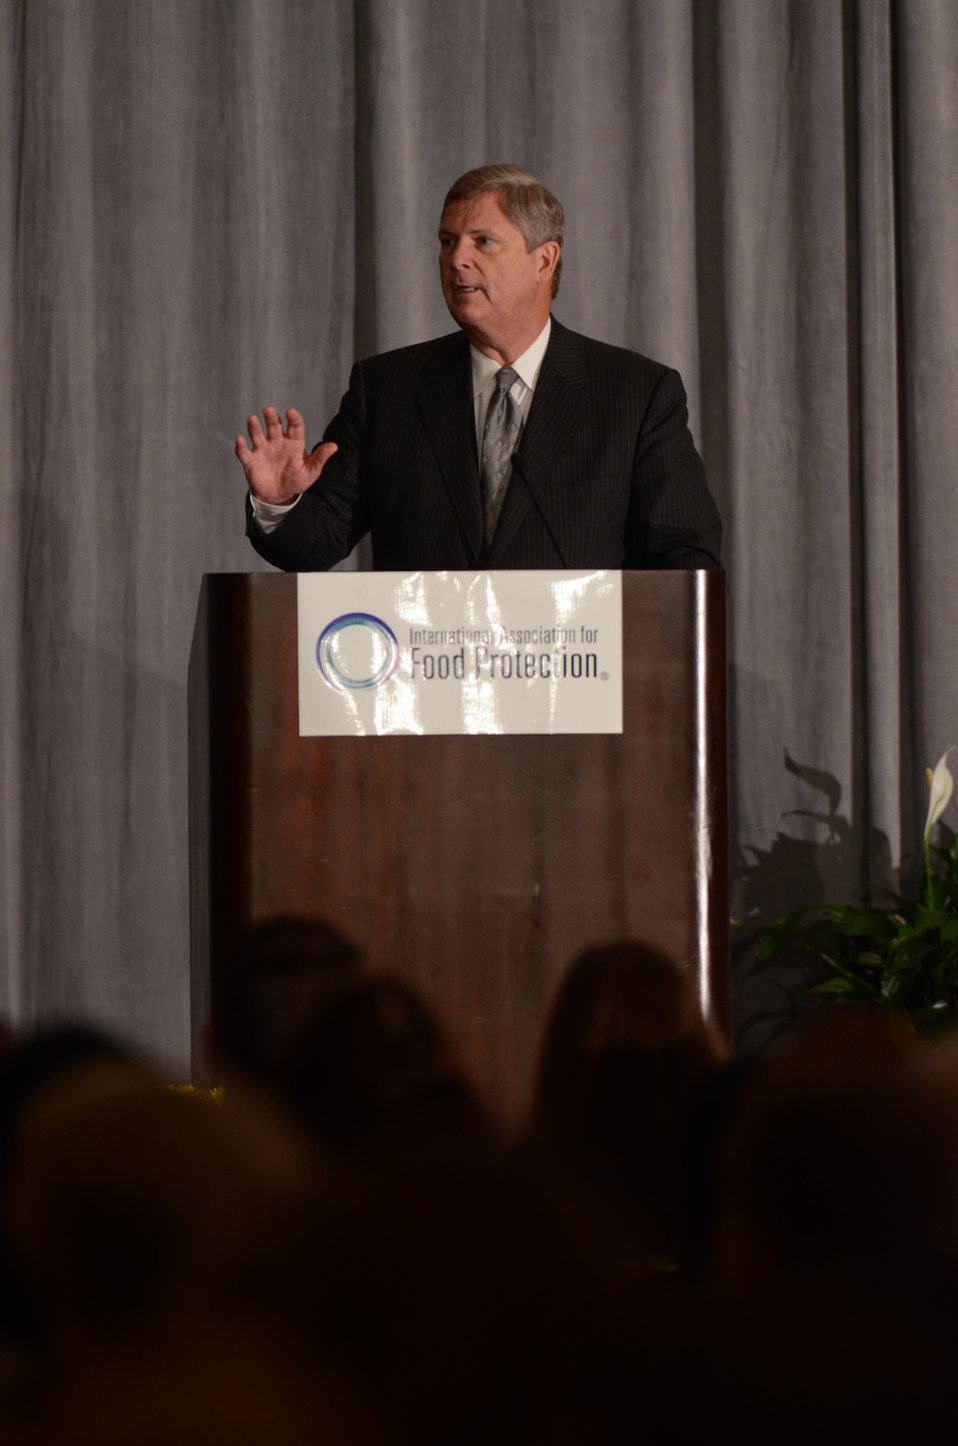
Agriculture Secretary Tom Vilsack speaks at the International Association for Food Protection (IAPP) 100th annual meeting in Milwaukee, WI, on Wednesday, August 3, 2011. IAPP is committed to providing members worldwide with a forum to exchange information on protecting the global food supply.